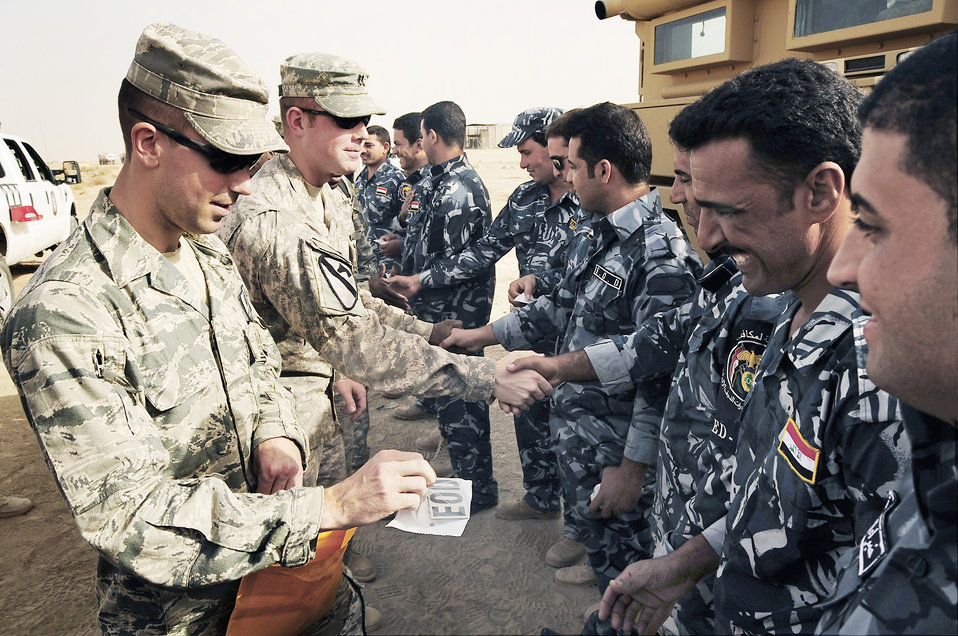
Airmen train Iraqi police

Staff Sgt. Jonathan Quast gives Iraqi police explosive ordnance disposal technicians their EOD patches upon completion of several hours of training conducted by Air Force EOD members Nov. 4, 2009, at Forward Operating Base Cedar, Iraq. Sergeant Quast is a 407th Expeditionary Civil Engineer Squadron EOD technician deployed from MacDill Air Force Base, Fla.